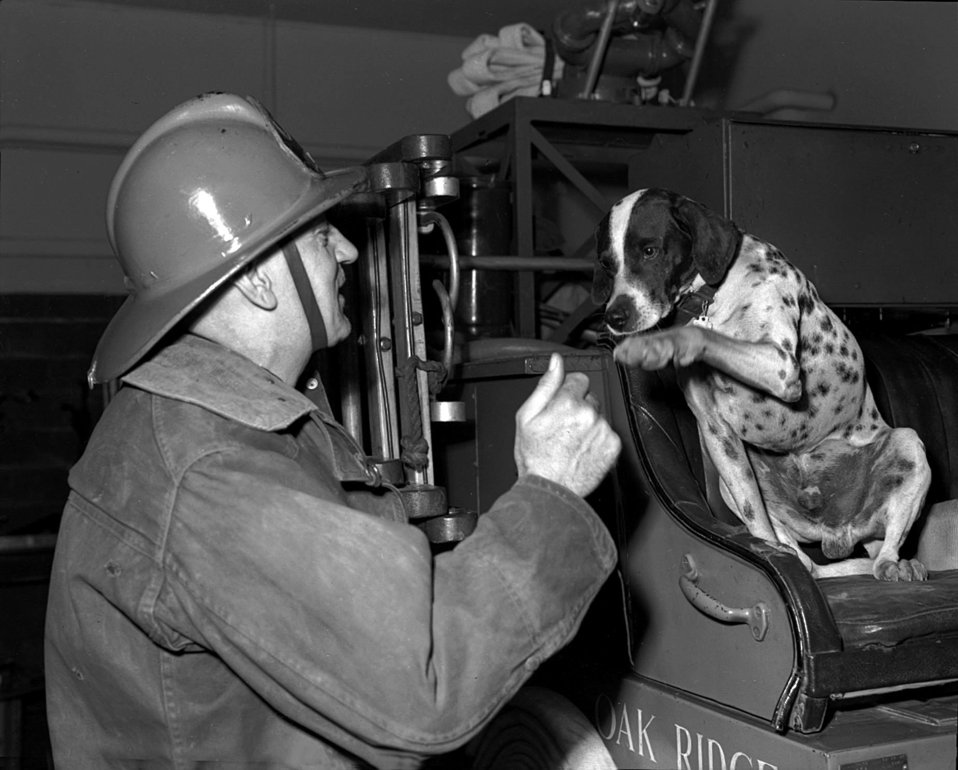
Fire Training School Oak Ridge

004454-14c DOE Photo by Ed Westcott

Dog with fireman Oak Ridge Tennessee 4/15/1948